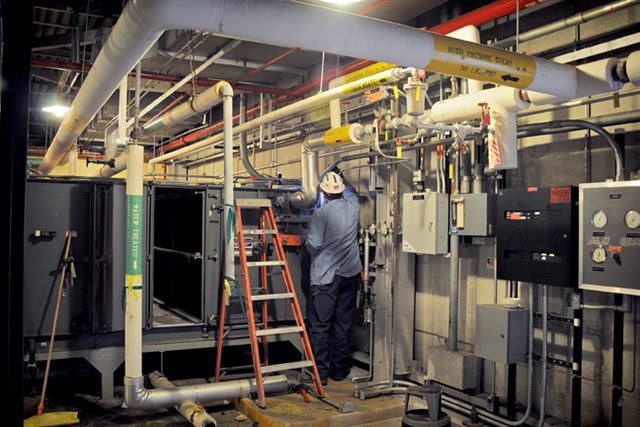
RAN DD INTEC S84 CPP-602 UPSTAIRS 072610 P6554-39 A